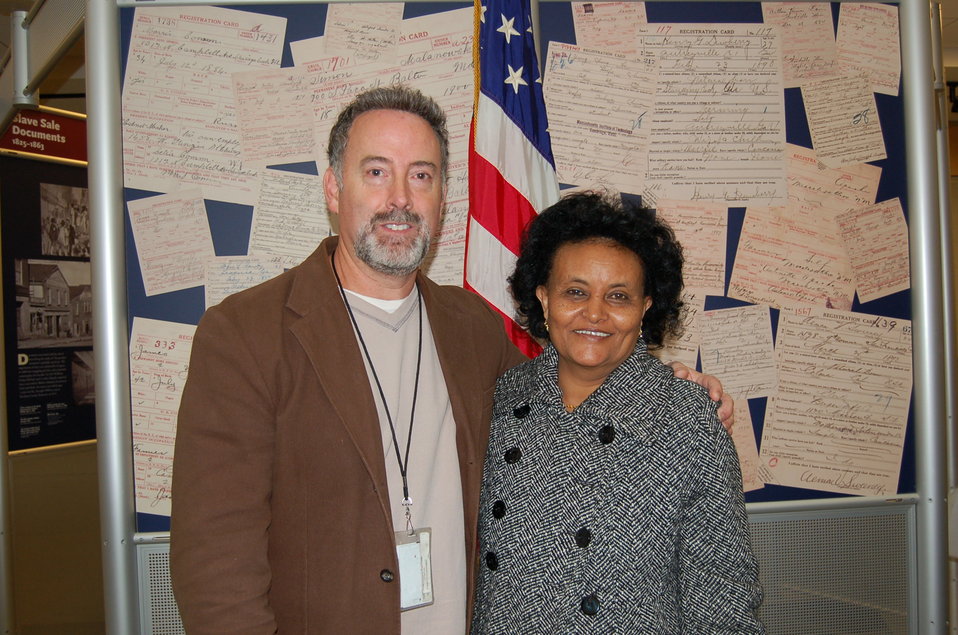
New Citizens